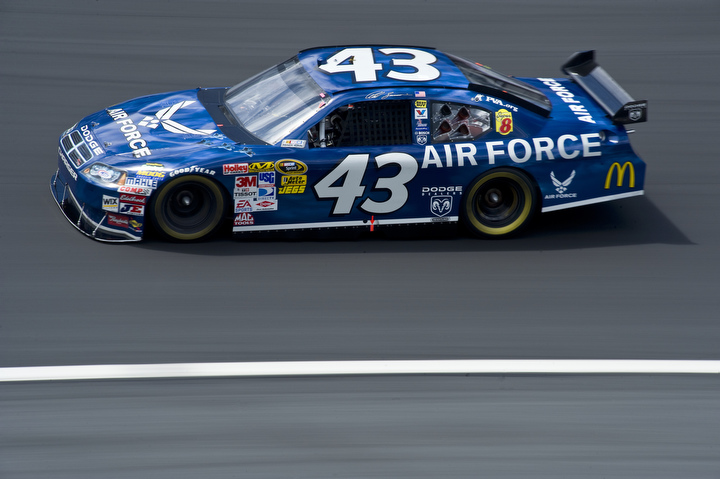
Coca-Cola 600

Reed Sorenson, NASCAR driver of the Richard Petty Motorsports #43 Air Force Dodge Charger, races around the Lowe's Motor Speedway at 186 mph during Coca-Cola 600 Sprint Cup race May 25. The #43 was painted in an Air Force paint scheme as a Salute to the Military for Memorial Day.